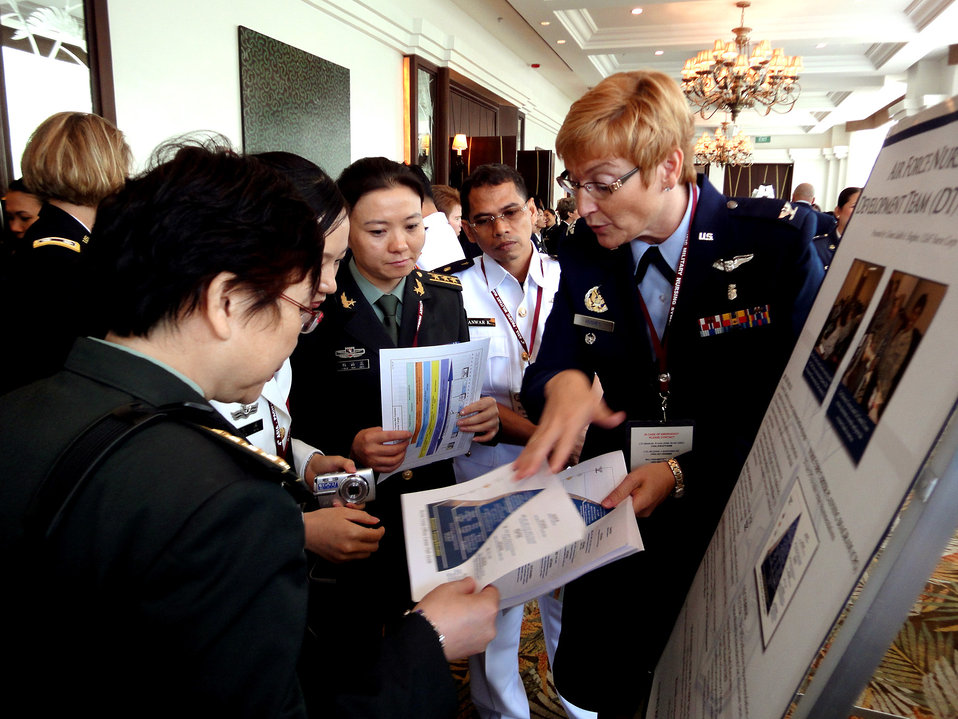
Military nursing symposium

Col. Judith Hughes talks to delegates from China and Indonesia during the 4th annual Asia-Pacific Nursing Conference Symposium, where more than 200 nurses from 13 countries were in attendance. The seven-day conference, hosted by the Armed Forces of the Philippines Office of the Chief Nurse, in collaboration with U.S. Pacific Command and the 13th Air Force, focused on nursing education, career development, global pandemic preparedness and disaster management. Colonel Hughes is the Pacific Air Forces' chief nurse at Joint Base Pearl Harbor-Hickam Hawaii.